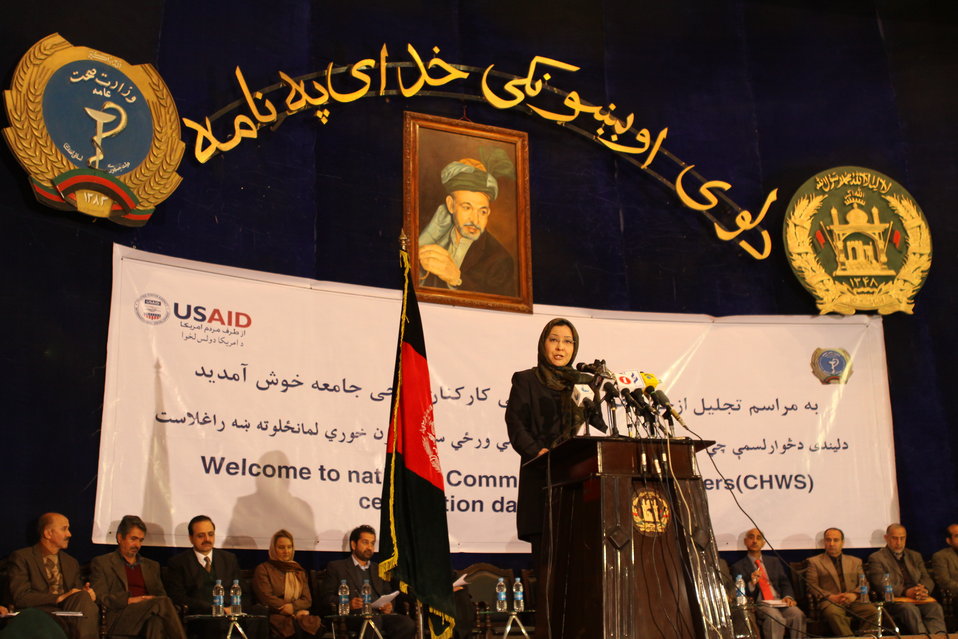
Community Health Workers Celebrated

Kabul, Afghanistan | December 5, 2010 — In support of the United Nations designated International Volunteer Day for Economic and Social Development, Afghanistan’s Ministry of Public Health celebrated its annual Community Health Worker Day today. Acting Minister of Public Health Dr. Suraya Dalil, USAID Senior Deputy Mission Director Robert Hellyer, other government officials, and international donors joined in recognizing the critical contribution of community health workers in Afghanistan and encouraging them to continue their voluntary support to their communities.
The event praised the contributions of the more than 22,000 volunteers throughout the country who deliver community level health-education, counseling, and services out of village health posts located in private homes. The Ministry of Public Health envisioned that community-based healthcare programs will actively encourage communities and families to adopt healthy lifestyles and behaviors, and provide families access to high quality and socially acceptable preventative medicine and life-saving services.
“We have 22,000 community health workers in Afghanistan that are able to implement the basic and standard medicines. They all have been trained through a job description,” said Minister Dalil. Addressing the health workers, she added, “I am proud and feel powerful that I have people like you.”
USAID-funded health projects collaborate closely with the Ministry of Public Health to improve the health and nutritional status of Afghans, provide quality primary healthcare, and promote healthy behaviors at the community and household-levels. USAID supported the training of more than 9,000 of the volunteer community health workers currently working in Afghanistan.
“On behalf of the American people, I congratulate the Community Health Workers for their diligence to gain the skills and knowledge necessary to serve their communities in this important role,” said USAID Senior Deputy Mission Director Hellyer. “USAID strongly supports community based health care and believes that quality community-based health services are essential to reaching Afghanistan’s Millennium Development Goals.”
To support the Basic Package of Health Services, USAID assisted in developing the community health worker training manual, helped train community health worker supervisors and master-trainers, facilitated in-service training, and produced and developed reporting tools, job aids, and education materials.